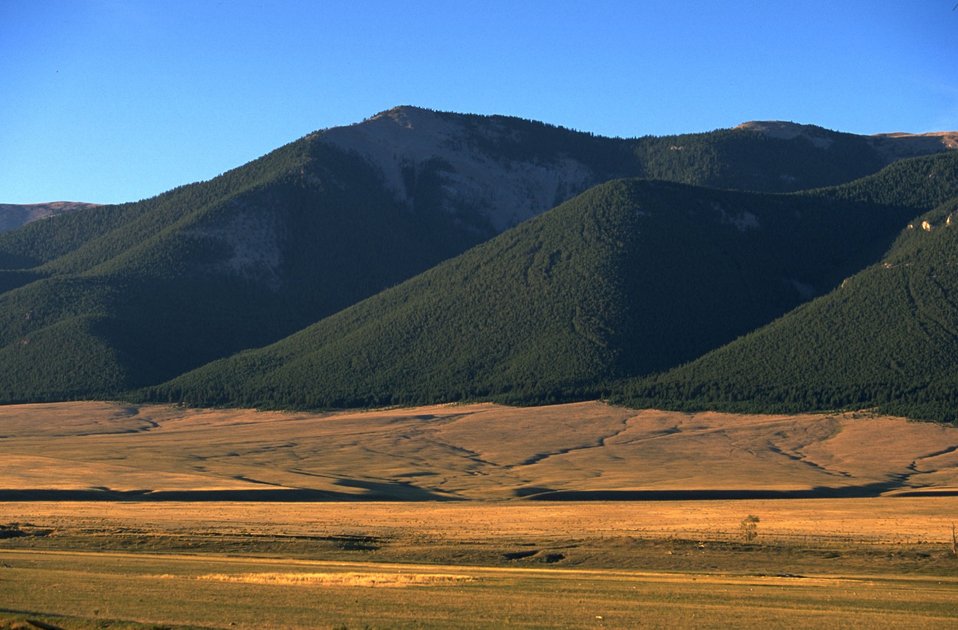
Grassy slopes leading to forested mountains